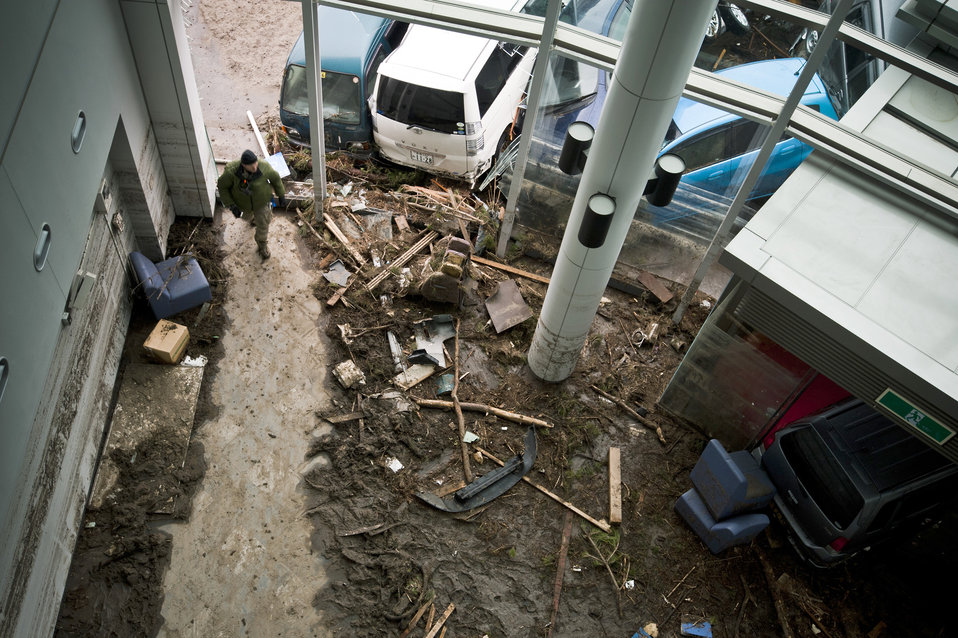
MC-130H Combat Talon II arrives at Sendai Airport

A pararescueman from the 320th Special Tactics Squadron looks for trapped survivors March 16, 2011, at Sendai Airport, Japan.